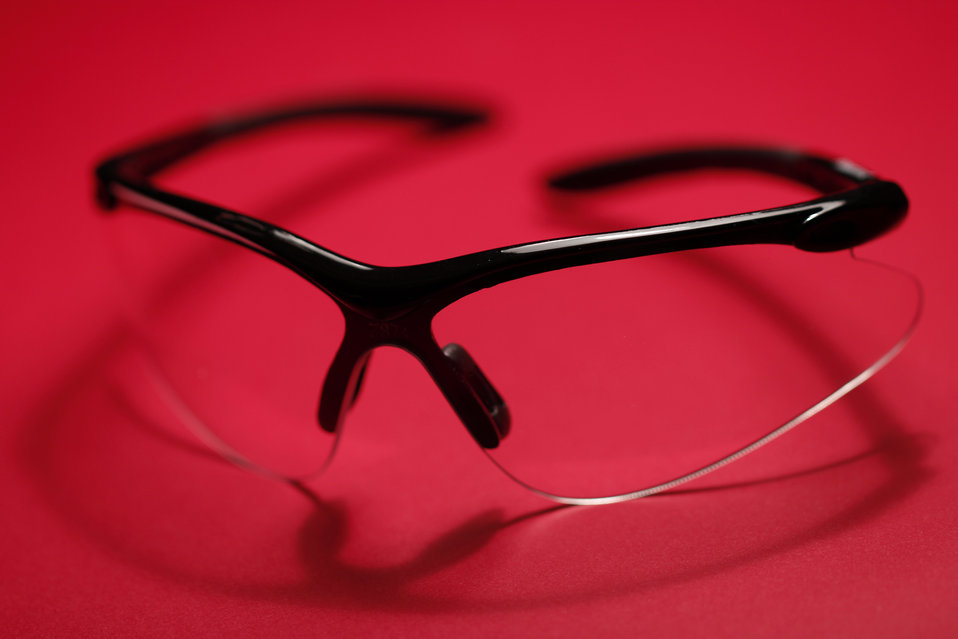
Set upon a bright red background, this image depicts a pair of protective laboratory eyewear consisting of clear colorless plastic lenses set into a black frame.